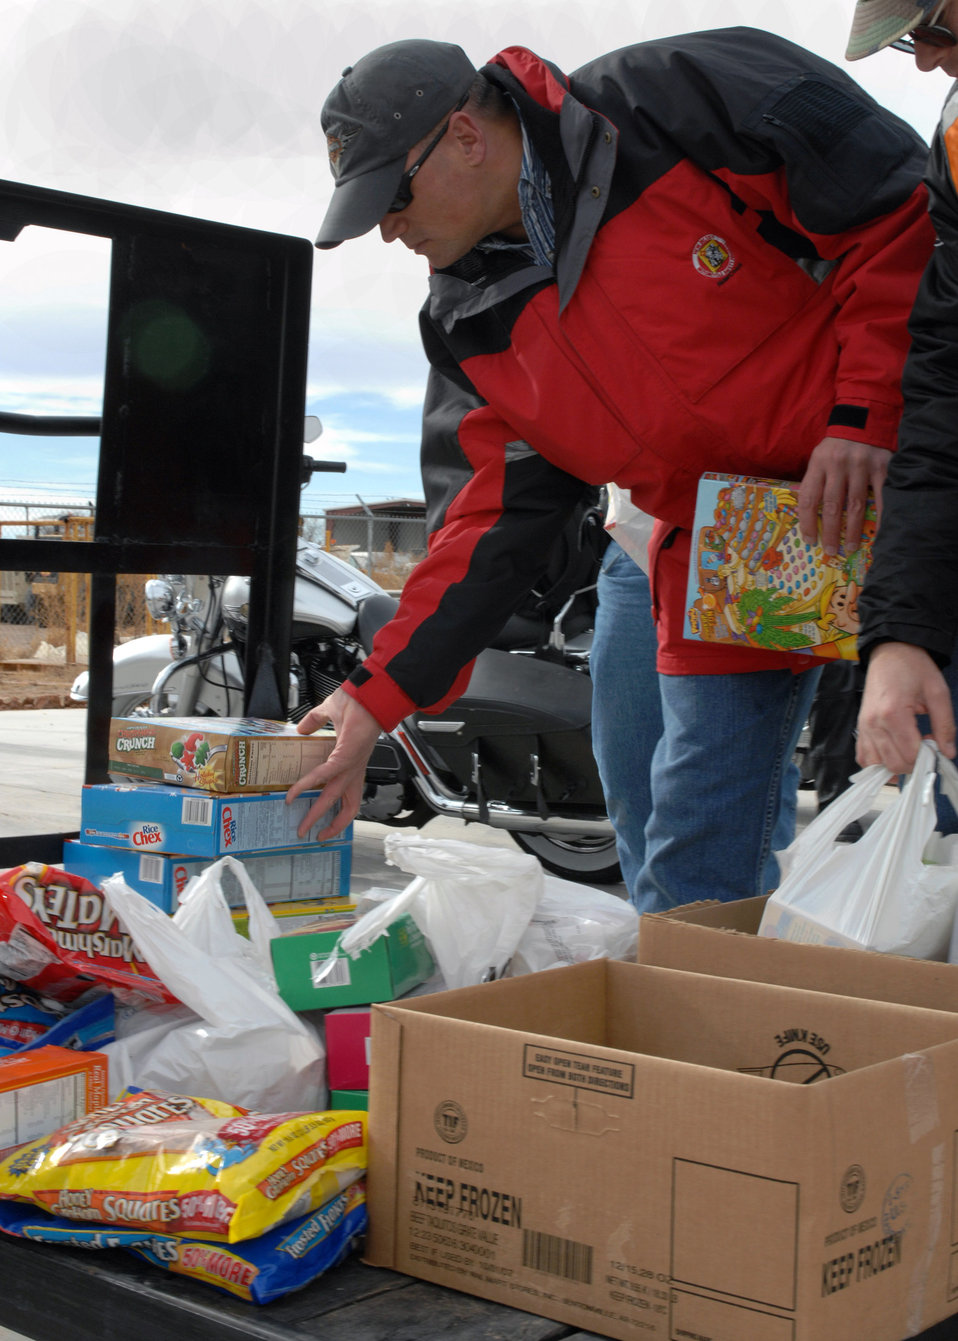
Bikers roll out meals on wheels

Master Sgt. Glenn Pugh stacks food on a cart at the Clovis Food Bank Dec. 6 in New Mexico. Sergeant Pugh is the 27th Special Operations Group first sergeant and a member of the motorcycle riders group at Cannon Air Force Base, N.M. The group took donated food to the food bank to share in the holiday spirit.